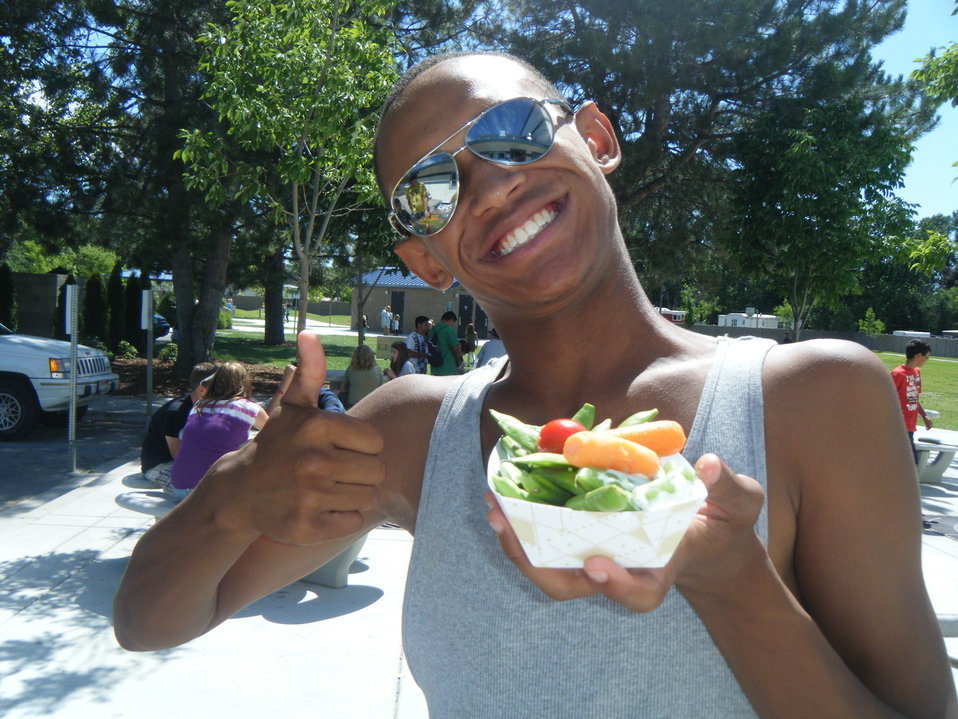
boys-and-girls-club-of-ada-county

A teen attends enjoys a healthy snack at a U.S. Department of Agriculture (USDA) Summer Food Service Program (SFSP) held at the Boys and Girls Club of Ada County in Garden City, Idaho. During the school year, more than 21 million children receive free and reduced-price breakfast and lunch through the USDA’s school Breakfast and National School Lunch Programs. However, when school ends for the summer many low-income kids relying on these school meals, go hungry. USDA’s Summer Food Service Program (SFSP) helps children get nutritious meals during the summer months so they are ready to learn when they return to school in the fall.